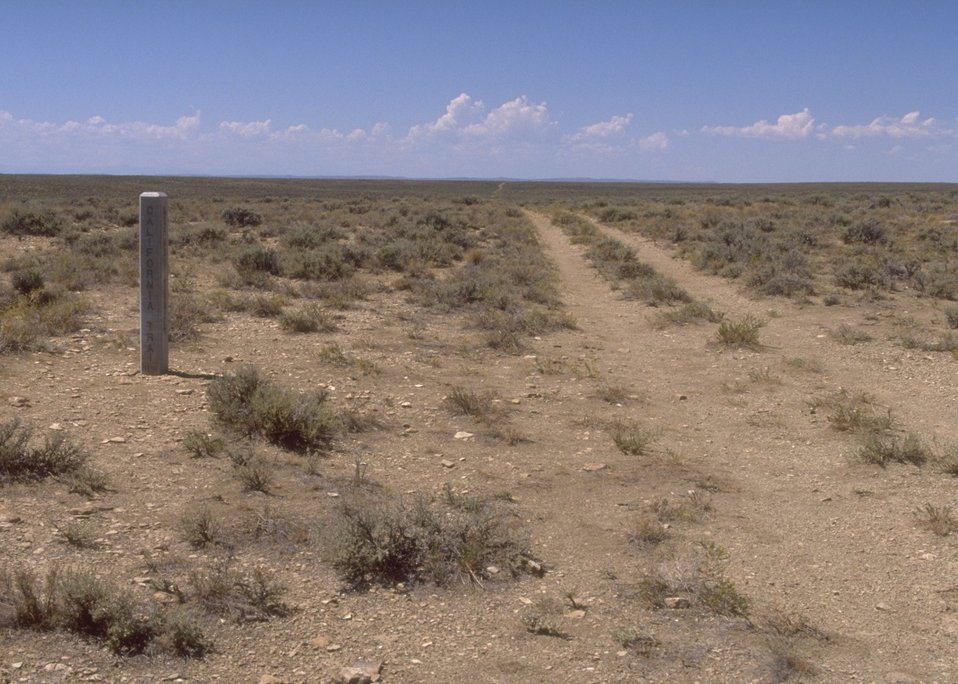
Indian Emigrant relations interpretive area along the Oregon Trail showing where the trail was located, Rock Springs Field Office.